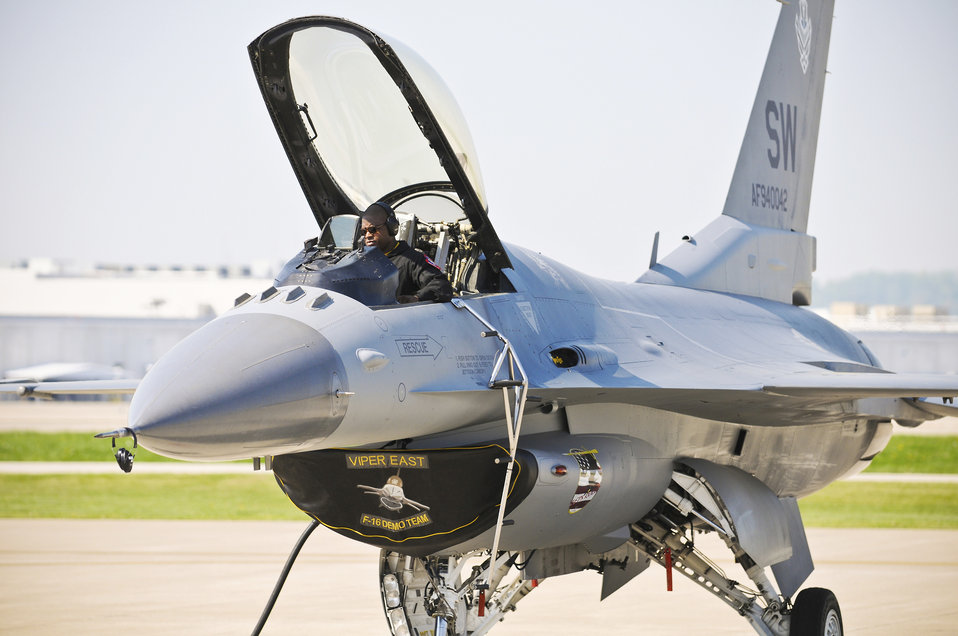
Strike Eagle, Fighting Falcon 'thunder' over Kentucky

Tech. Sgt. Pierre Julien configures navigation gear in the cockpit of an F-16 Fighting Falcon April 15, 2010. while sitting on the Kentucky Air National Guard Base flightline in Louisviille, Ky. The aircraft is part of the U.S. Air Force Viper East Demo Team, which is in town to participate in the Thunder Over Louisville air show. Sergeant Julien is a crew chief from the 20th Fighter Wing at Shaw Air Force Base, S.C.